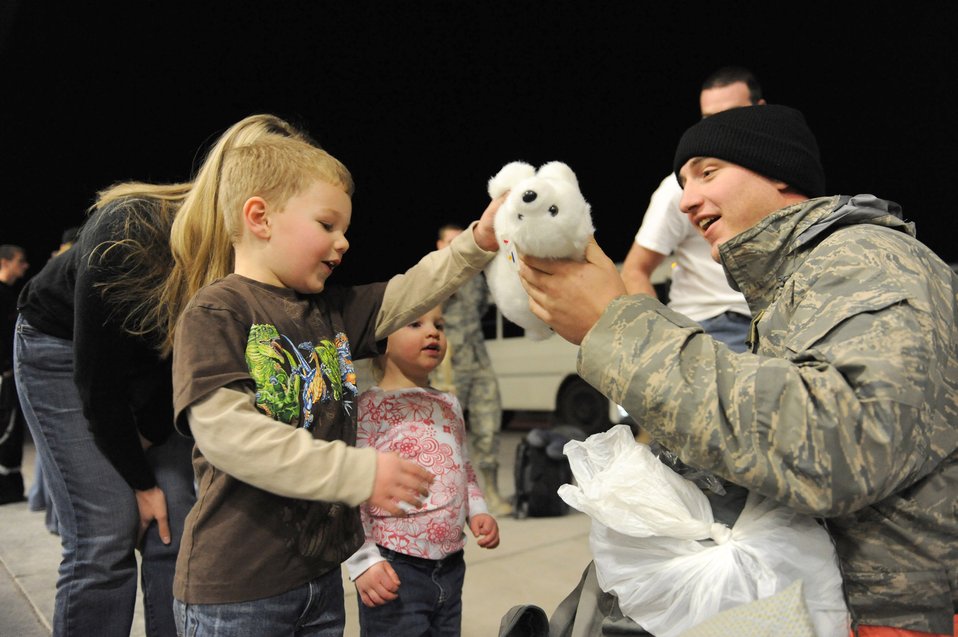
A present from Daddy

Tech. Sgt. Justin Morrison gives a gift to his son, four-year-old Micah, as his daughter and wife watch at Nellis Air Force Base, Nev. The 763rd Maintenance Squadron and 66th Rescue Squadron Airmen returned home from a deployment supporting the war on terrorism in Southwest Asia.